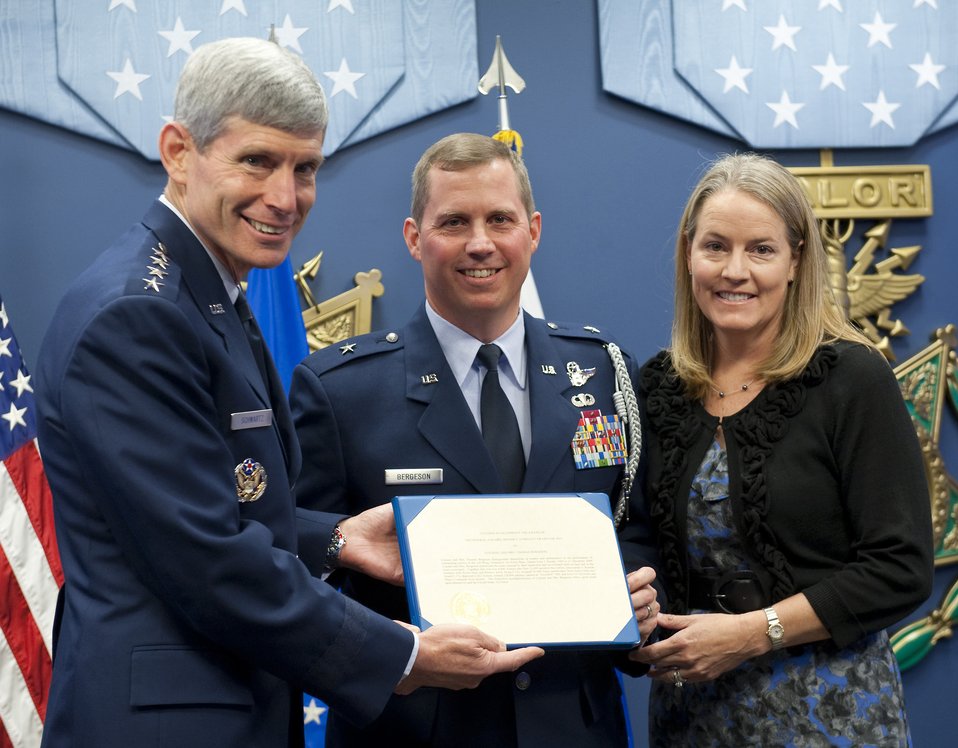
O'Malley Award

Air Force Chief of Staff Gen. Norton Schwartz (left) presents the 2010 General and Mrs. Jerome F. O'Malley award to Brig. Gen. Thomas W. Bergeson and his wife Pamela during a ceremony in the Pentagon Oct. 4, 2010. The award is presented annually to the wing commander and spouse team who have best exhibited their own courage, power, grace and beauty in caring for Air Force families. The award was established after the O'Malleys, who were known for their leadership and contributions to Air Force families and communities, were tragically killed in a plane crash in 1985.